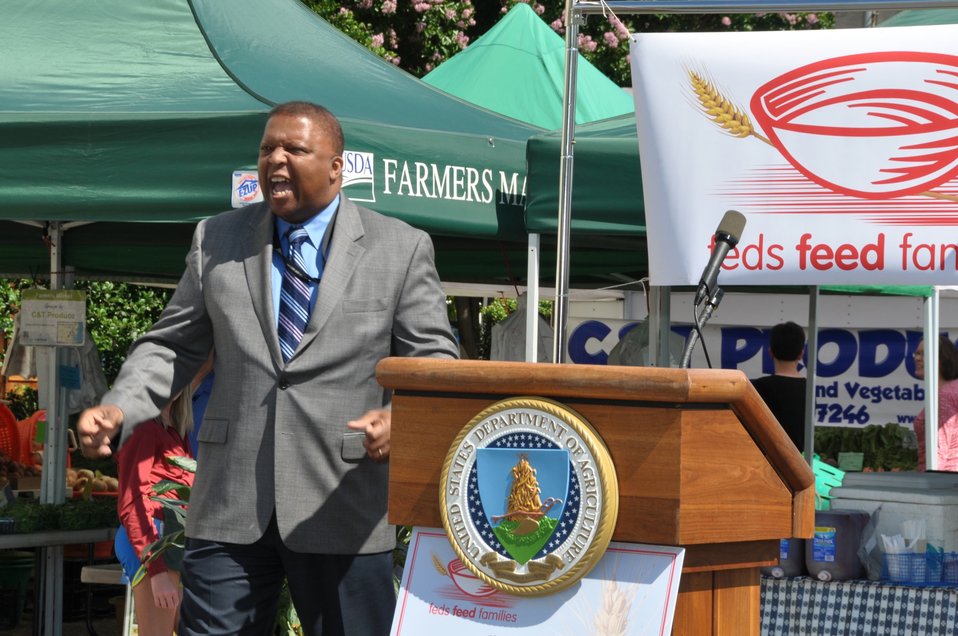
Keeler Motivates at Feds Feed Families Kick-Off

Doug Keeler, the National Program Manager of Feds Feed Families, motivates the federal employees during the kick-off event at the USDA Farmers Market.